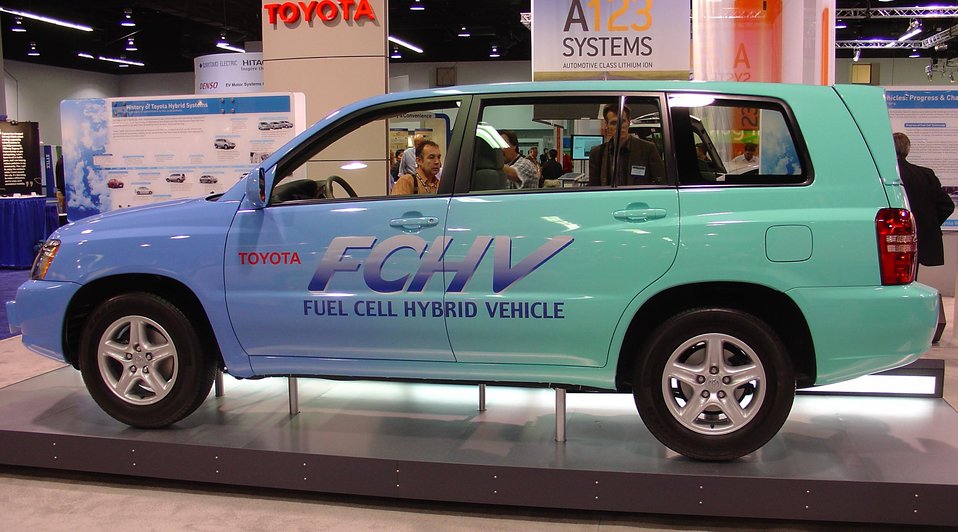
Toyota 2008 FCHV (fuel cell hybrid vehicle) at the EVS23 Conference in Anaheim, California.

Fuel cells combined hydrogen fuel with oxygen from the air to create electricity, which powers vehicle by means of electric motors. Because there is not combustion in the process, there are no other emissions, making fuel cells an extremely clean and renewable source of electricity.